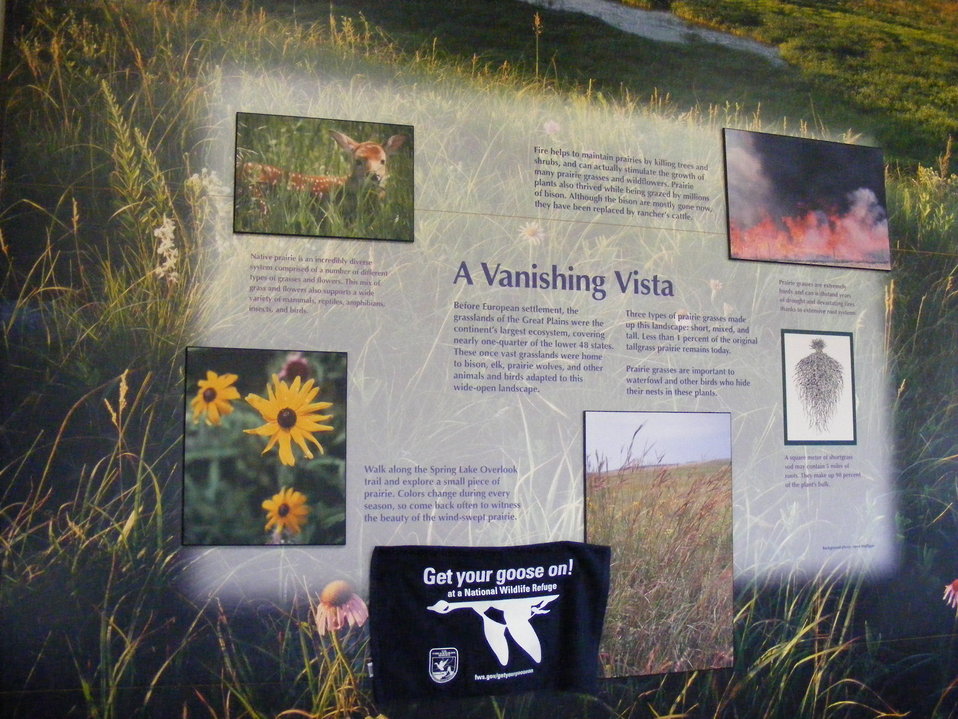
Get Your Goose On!